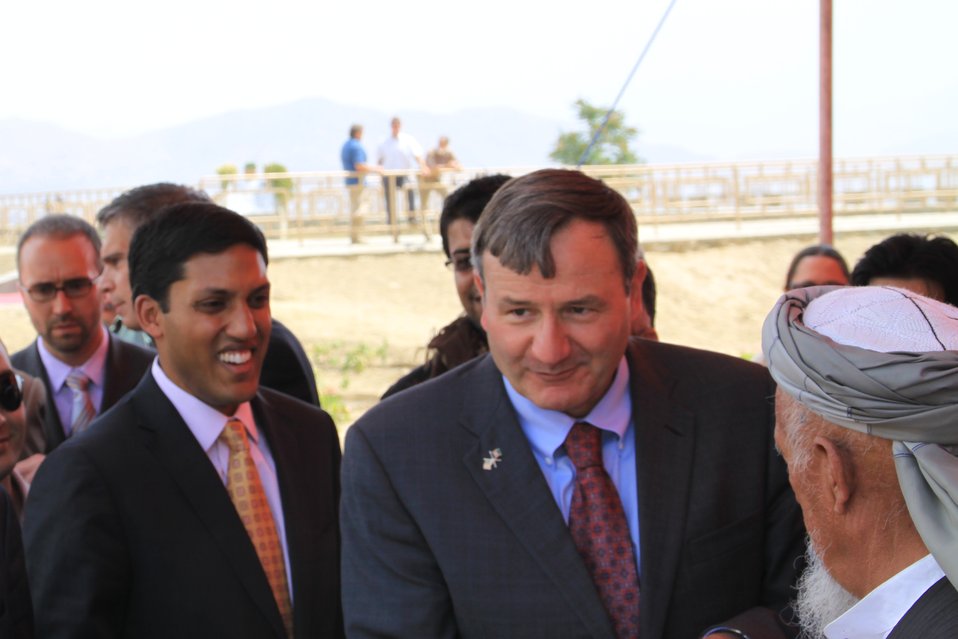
Badam Bagh Farm